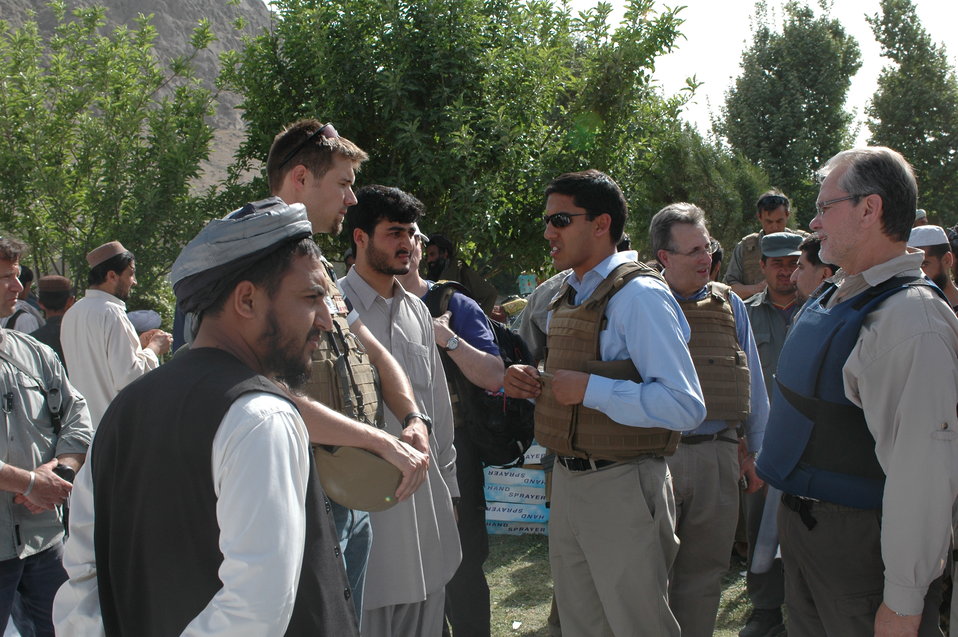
Dr Shah Visits Argandab April 10, 2010